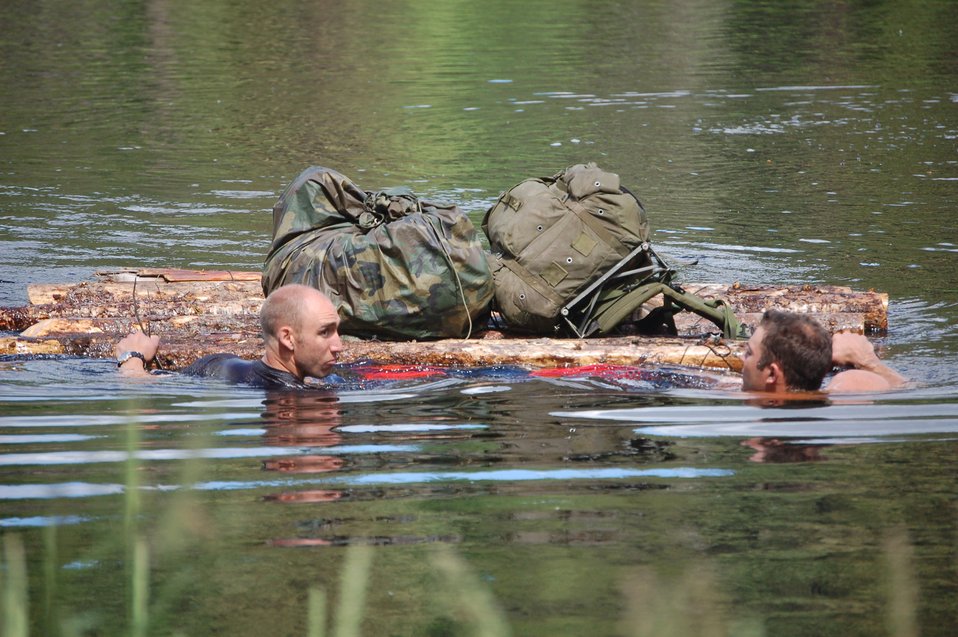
Air Force 'Guardian Angels' put to test at survival competition

Staff Sgt. Michael Garcia and Staff Sgt. Matthew Zimmer, competitors in the 2007 SERE (survival, evasion, resistance and escape) Challenge, swim across a frigid pond in Colville National Forest near Fairchild Air Force Base, Wash. The sergeants, both SERE specialists at Fairchild AFB, were pushing a raft they constructed to keep their gear dry. The task was one of many skill sets the 15 teams had to master during the competition. Finishing first, the team won the Col. Bud Day trophy.